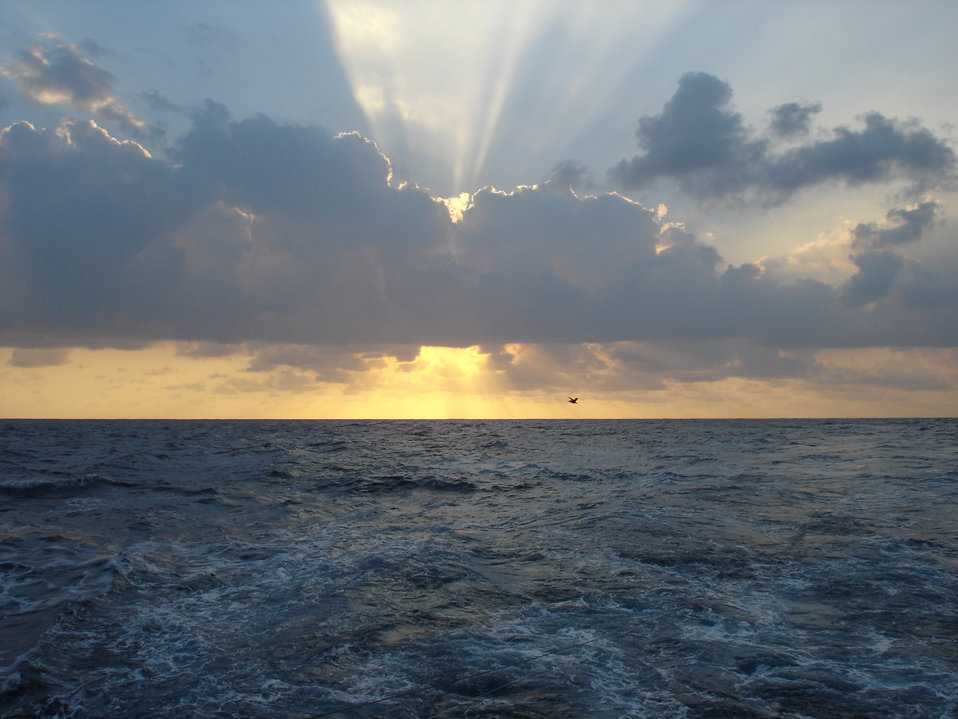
Shadow bands and light bands during a tropical sunset